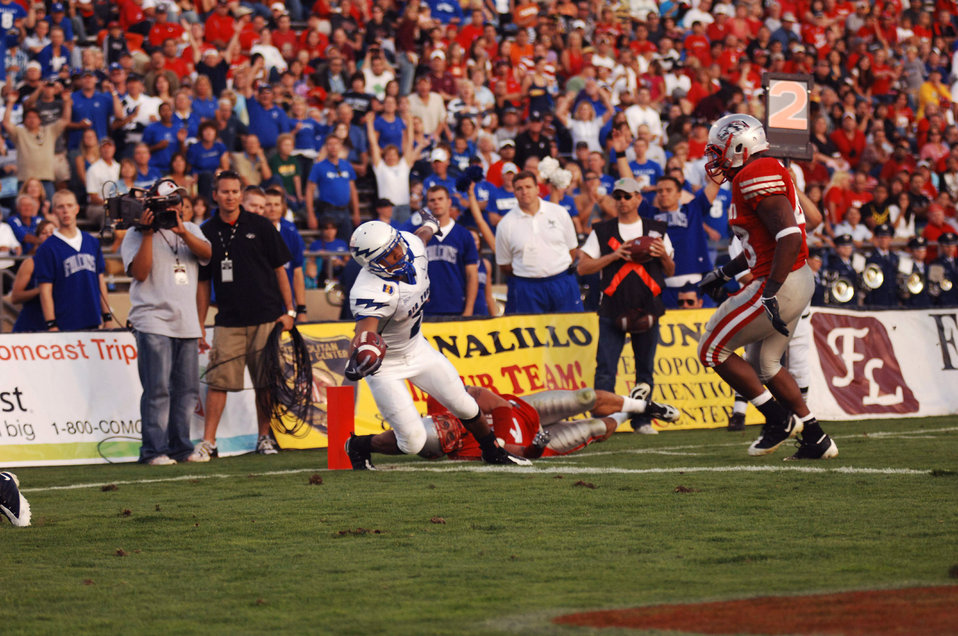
Football: Falcons feast on turnovers, down New Mexico 37-13

U.S. Air Force Academy junior running back Savier Stephens stretches to break the plane of the goal line to put the Falcons up 23-0 during football action Sept. 19, 2009, at Albuquerque, N.M. Stephens finished the game with 35 yards on eight carries, as the Falcons offense ground out 298 rushing yards and 371 yards of total offense.